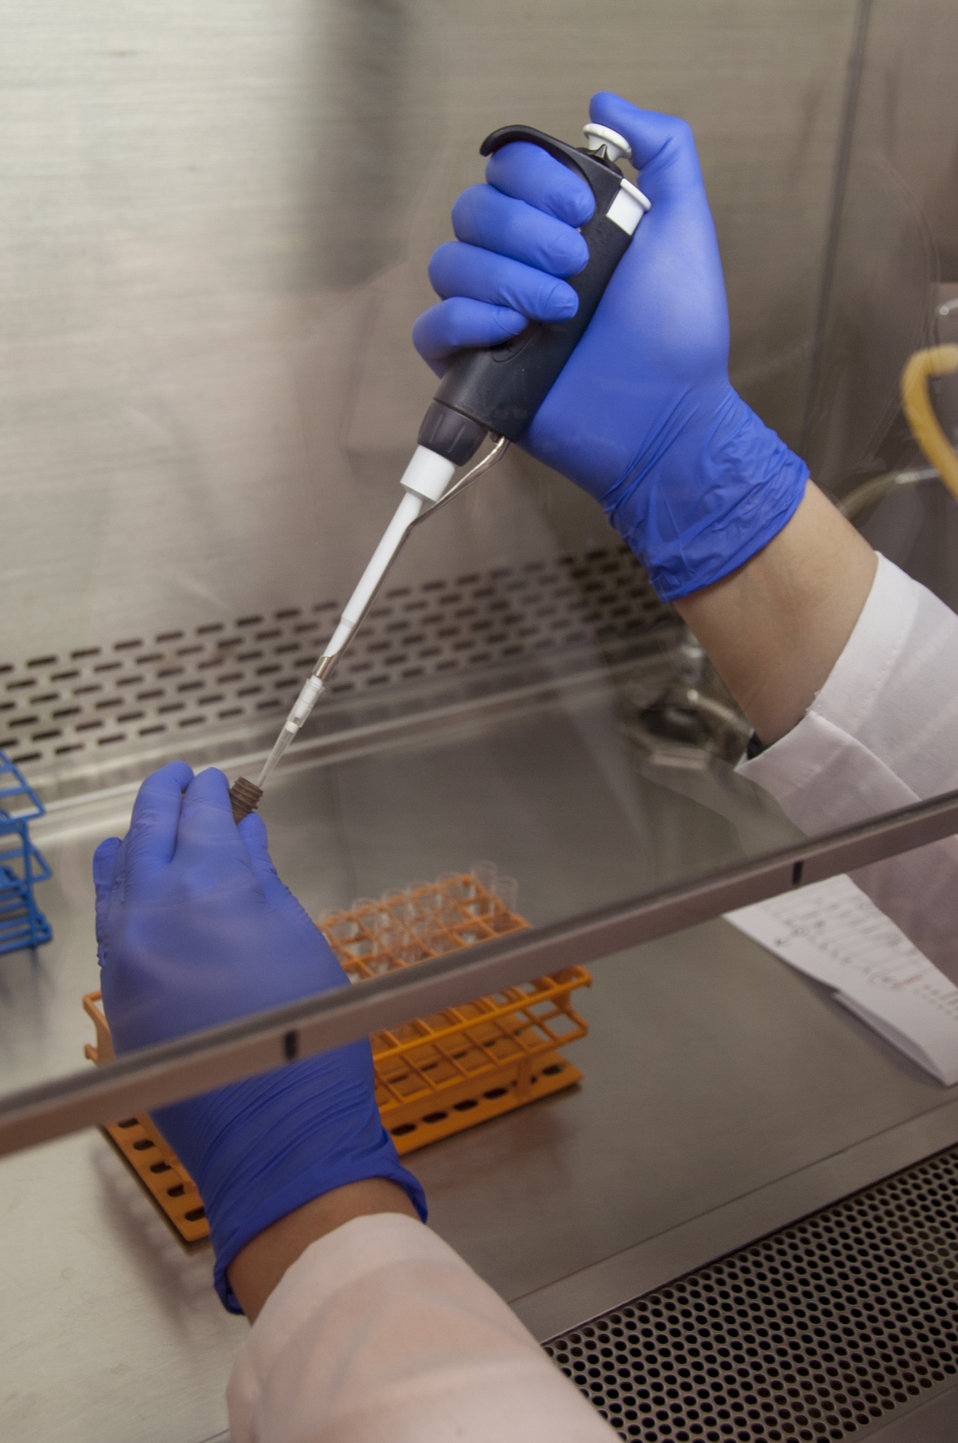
Stem Cell Research (0469)

Heba Degheidy, M.D., Ph.D., a post-doctoral research fellow at FDA, works with stem cell samples in an FDA laboratory on the National Institutes of Health campus in Bethesda, Md.

To learn more about stem cell research, read this FDA Consumer Update:

Adult Stem Cell Research Shows Promise

This photo is free of all copyright restrictions and available for use and redistribution without permission. Credit to the U.S. Food and Drug Administration is appreciated but not required.

Privacy and use information: www.flickr.com/people/fdaphotos/